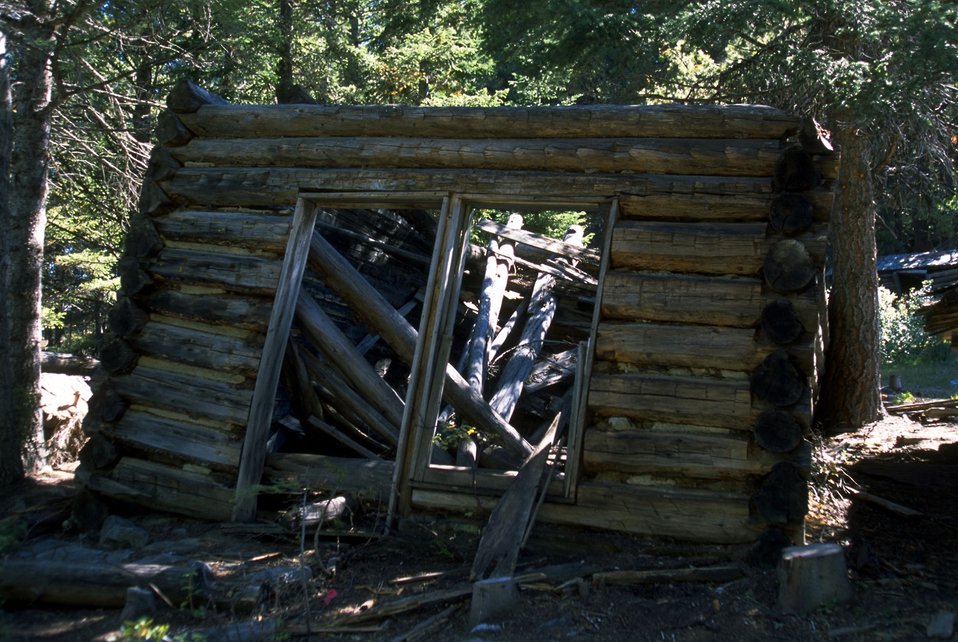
Coloma Ghost Town-collapsed cabin